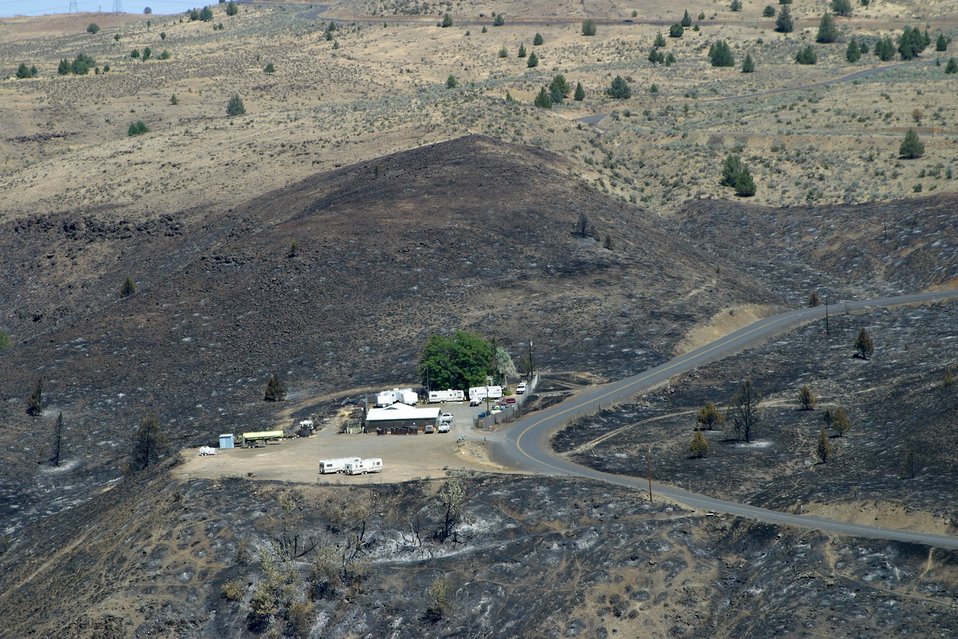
View of a fire east of Maupin with the BLM maintenance compound.